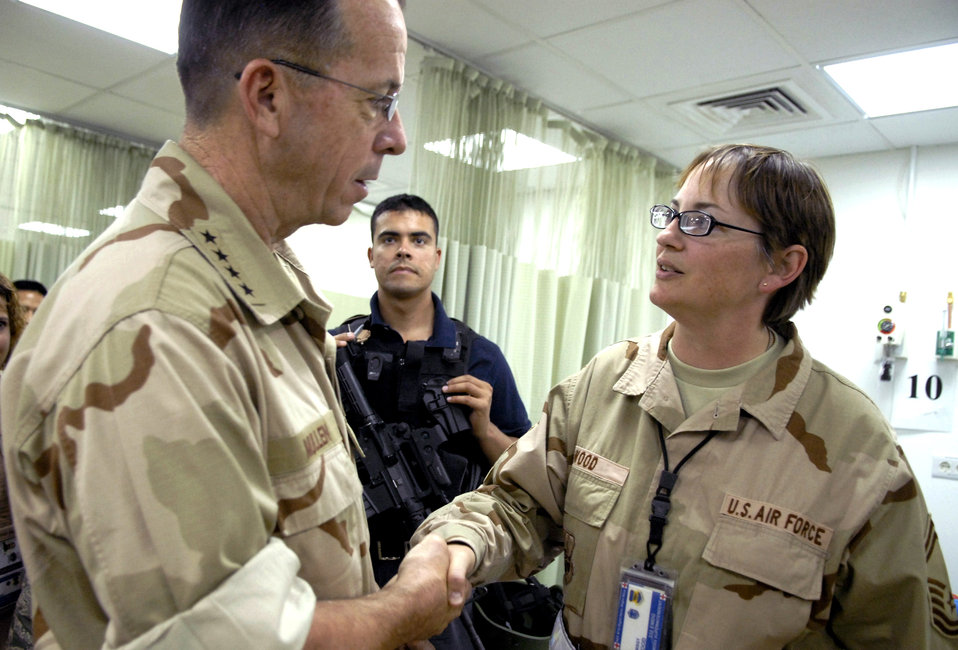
Chairman of the Joint Chiefs visits Air Force Theater Hospital

Senior Master Sgt. Angela Wood meets and coins Navy Adm. Michael G. Mullen with a Balad Air Base Top 3 coin during his visit Oct. 4 to Balad Air Base's Air Force Theater Hospital. Admiral Mullen is the newly appointed Chairman of the Joint Chiefs of Staff. Sergeant Wood is the superintendent of the 332nd Expeditionary Medical Support Squadron.